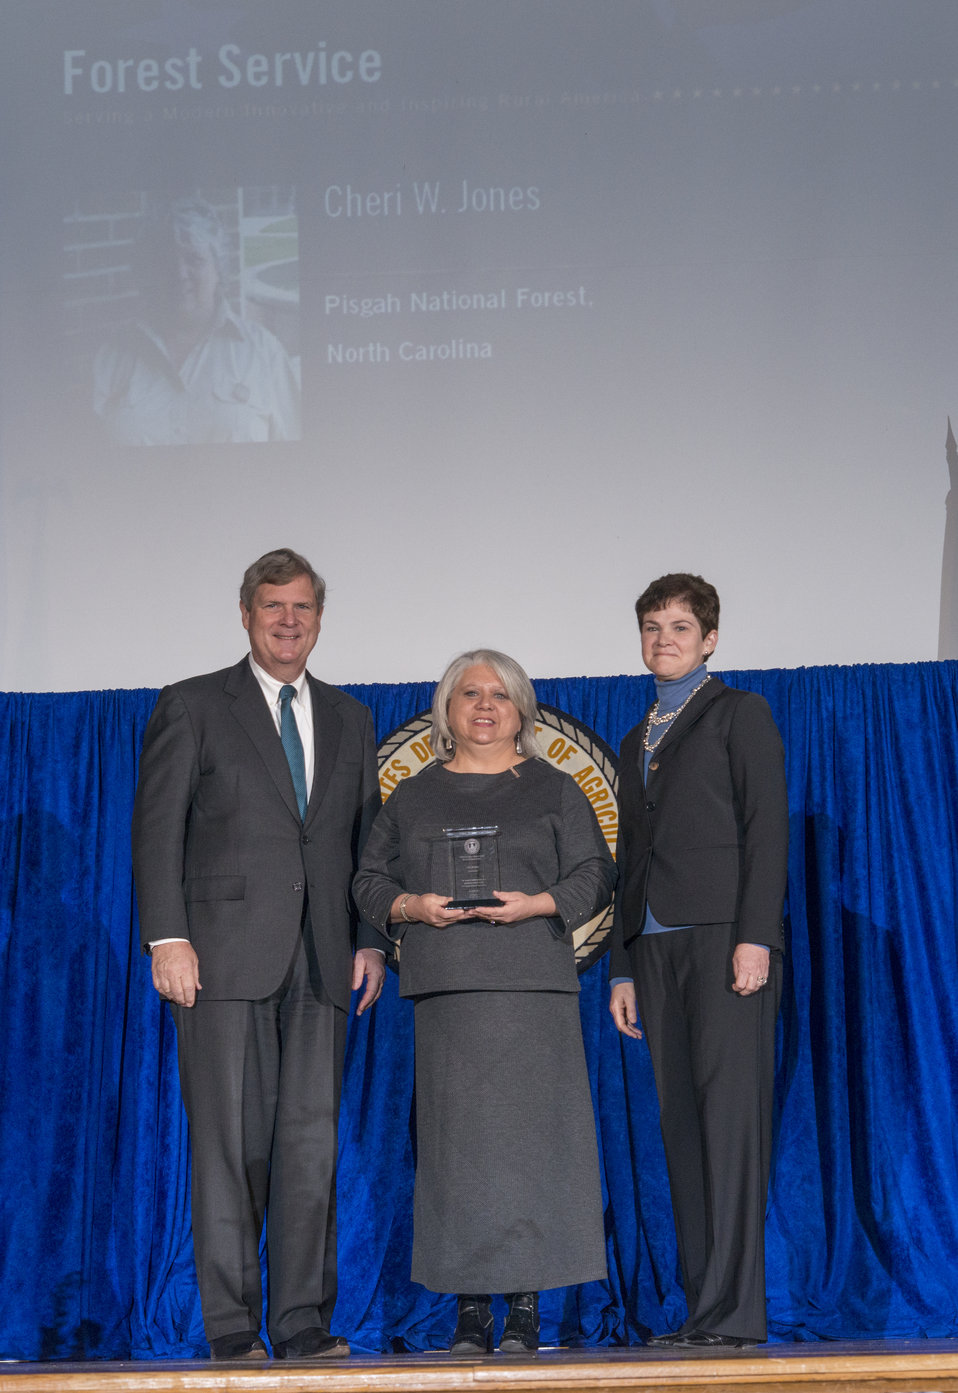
Agriculture Secretary Tom Vilsack and Agriculture Deputy Secretary Krysta Harden present the Secretary’s Honor Award to U.S Forest Service, Pisgah National Forest in North Carolina Cheri W. Jones for exhibiting excellence and leadership through the design and implementation of programs leading to being ranked #1 in the USDA/USFS Job Corps Literacy Program at the 2013 Secretary's Honor Awards in the Jefferson Auditorium at the U.S. Department of Agriculture (USDA) in Washington, D.C. on Wednesday, Dec. 11, 2013.